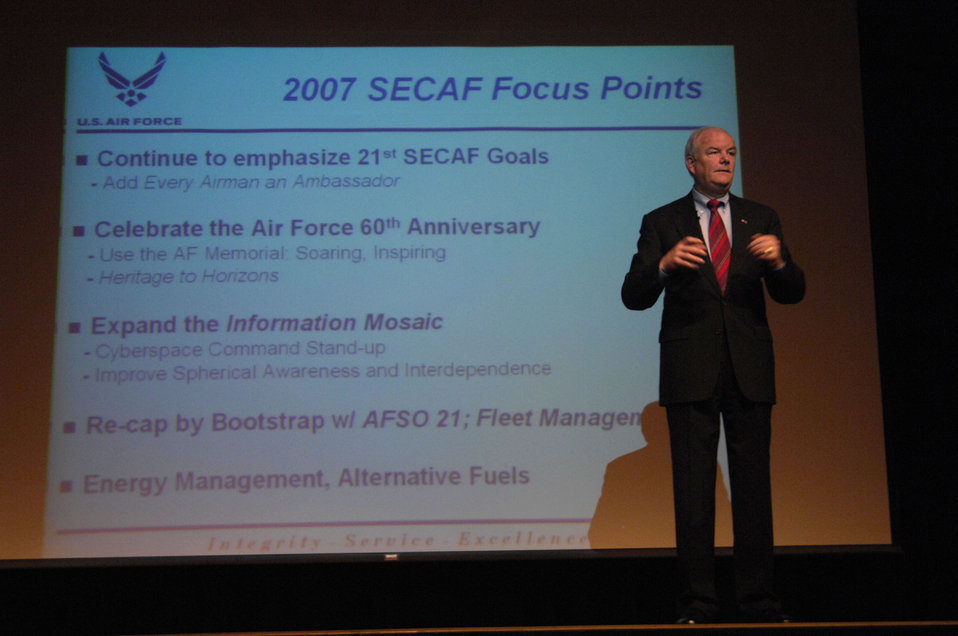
SECAF's town hall meeting

Secretary of the Air Force Michael W. Wynne discussed where he expects the Air Force to be in the future during his town hall meeting with Airmen and Air Force civilians at the Pentagon Jan. 31. Following his discussion of where he expects the Air Force to be in the future, he took questions from the audience.